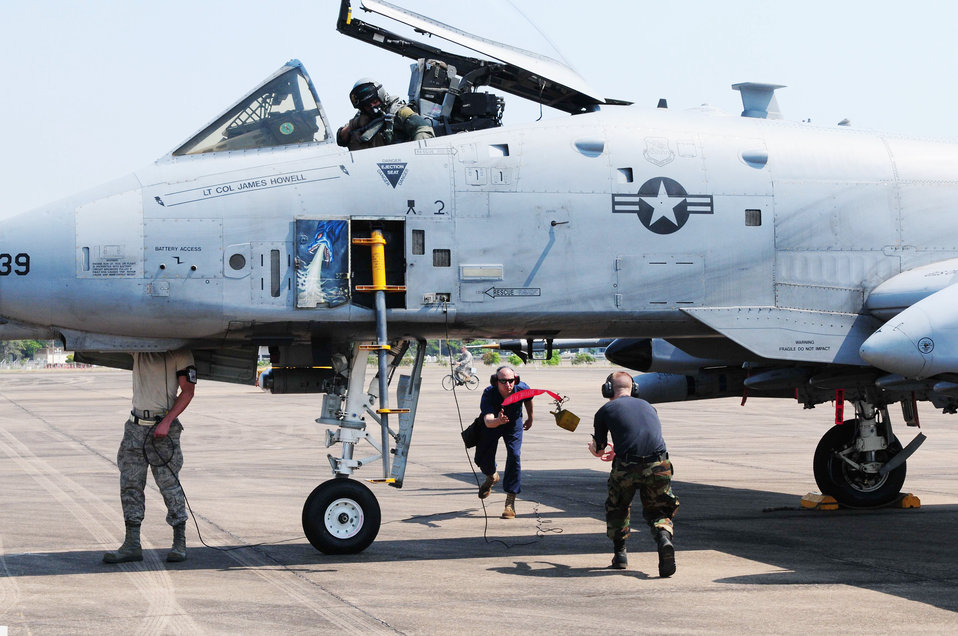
Airmen take flight at Cope Tiger

Airmen discard the